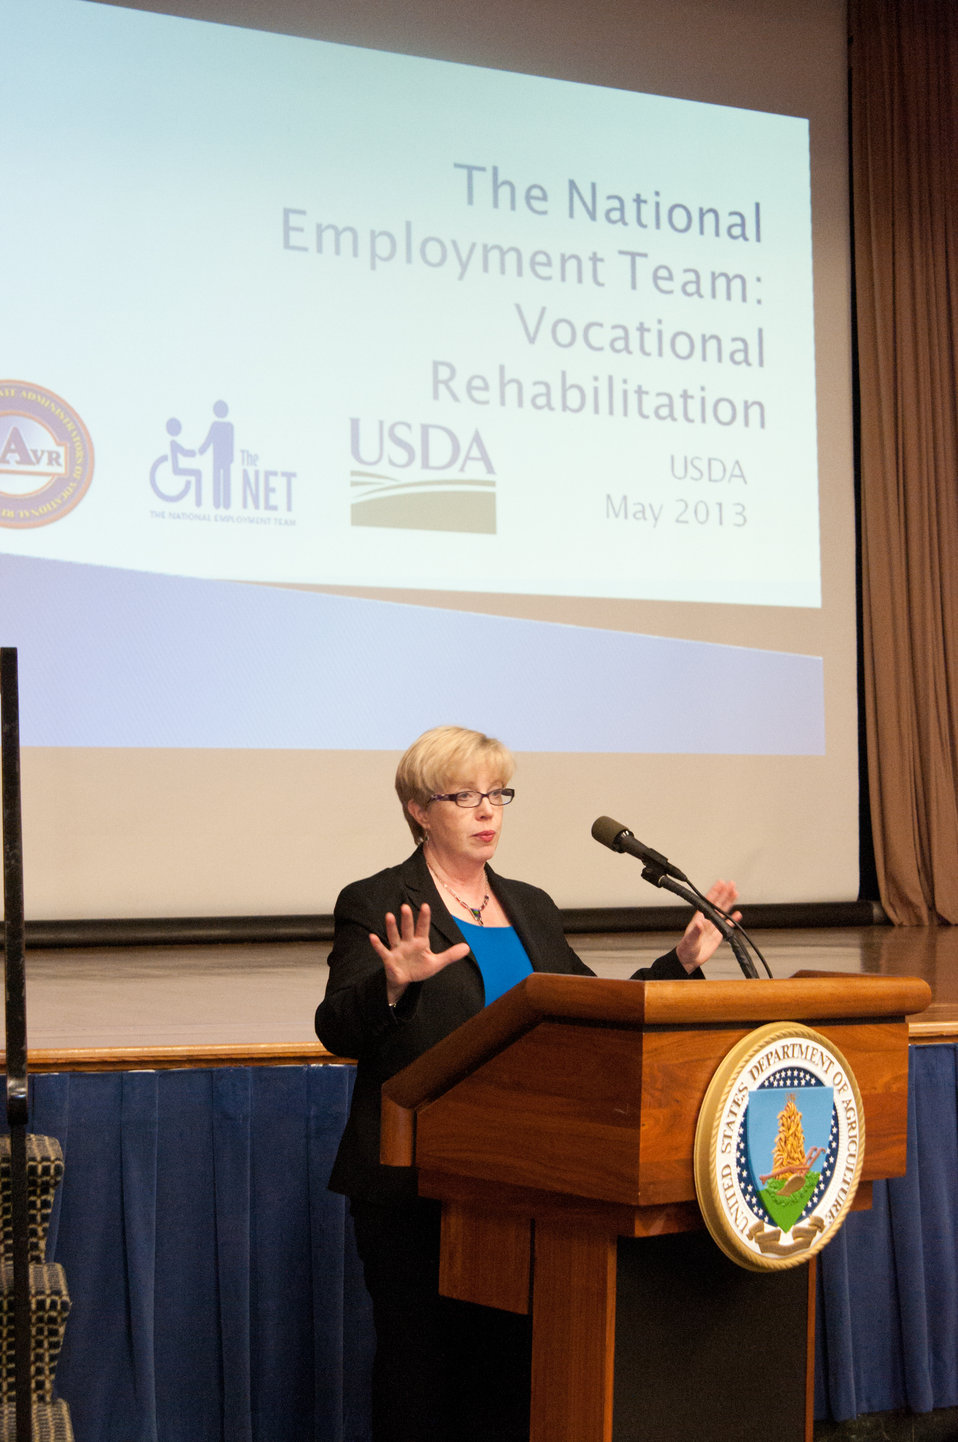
Council of State Administrator’s of Vocational Rehabilitation (CSAVR) Business Director Kathy West Evans discusses the CSAVR Memorandum of Understanding (MOU) and how it can help disability employment managers in the Federal government at the U.S. Department of Agriculture (USDA) Office of Human Resources Management (OHRM) Disability Employment Program Team Training at USDA in Washington, D.C. Tuesday, May 14, 2013.